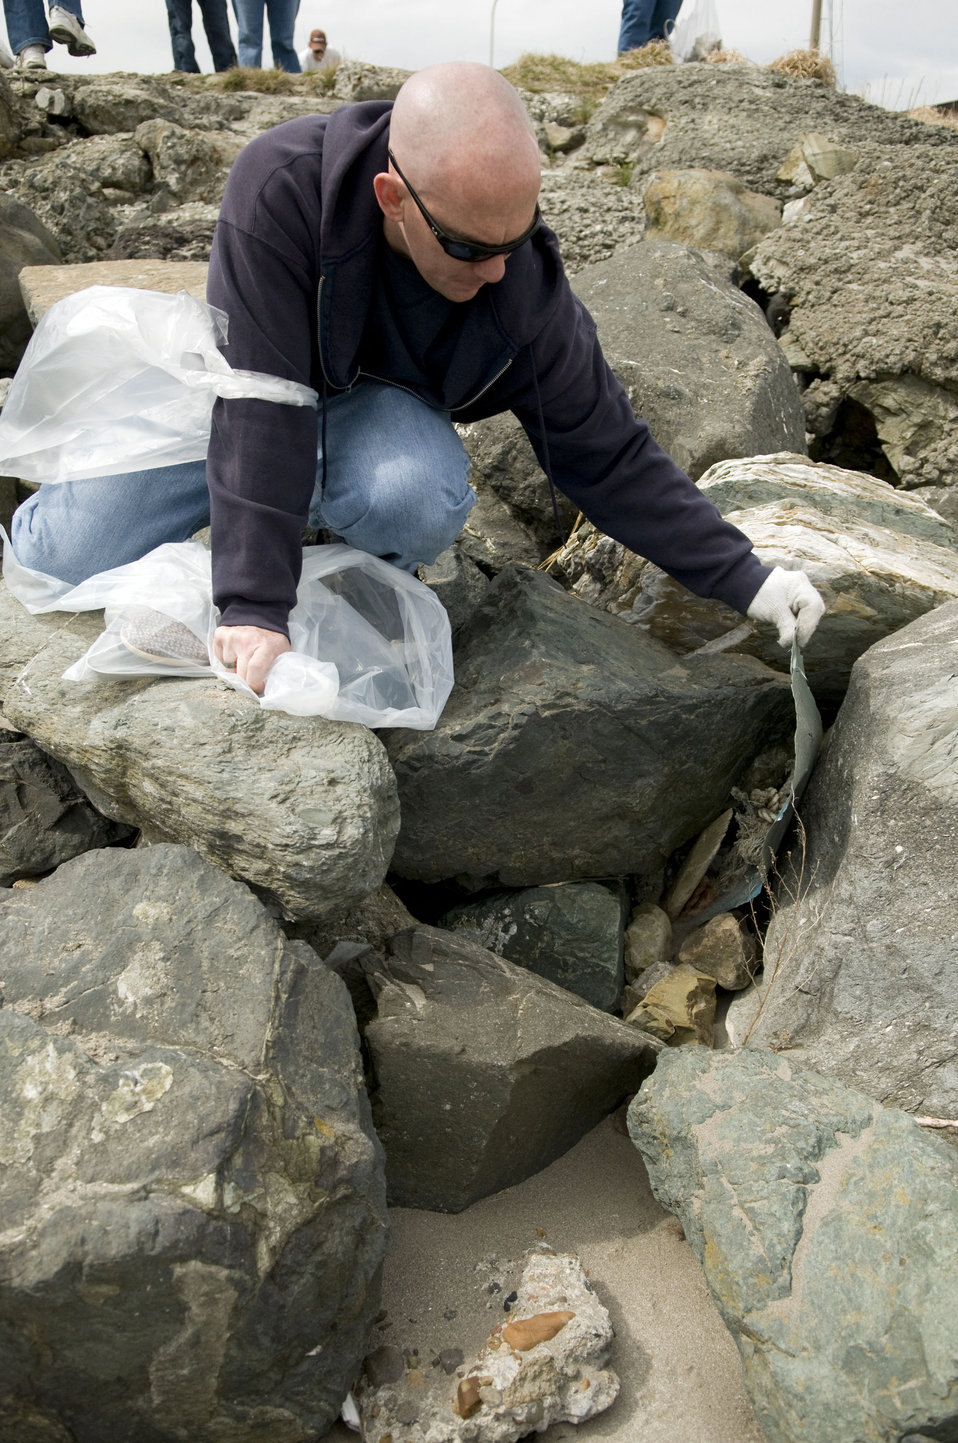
Misawa servicemembers, Japanese clean beach, port

Navy Petty Officer 2nd Class Steve Austin wriggles trash lodged in coastline rocks during the 13th Annual Misawa Port and Beach cleanup event April 10, 2010, at Misawa Air Base, Japan. Petty Officer Austin is from the Misawa Navy Air Facility Aircraft Intermediate Maintenance Detachment.